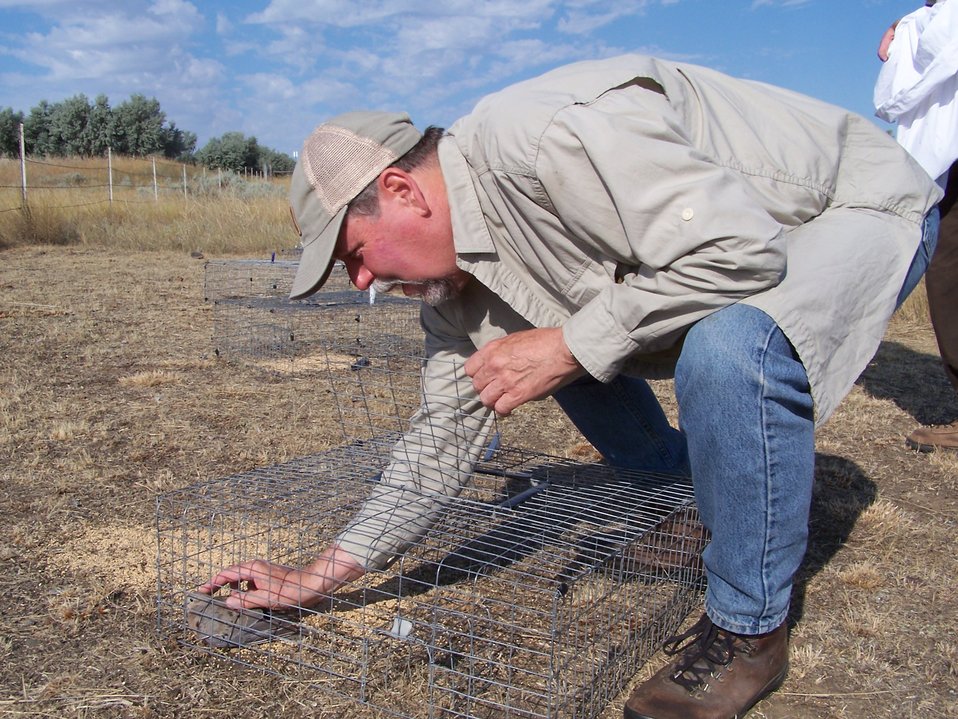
Retrieving Mourning Dove

Volunteer retrieves a mournding dove in a trap for banding at Bowdoin NWR.